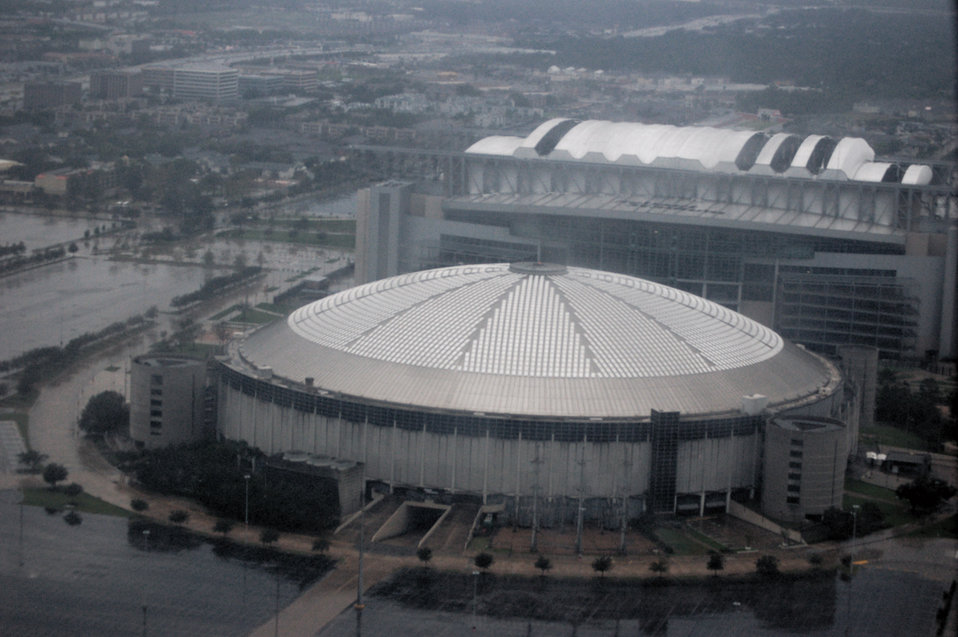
Airmen survey Ike damage

Staff Sgt. Rick Caldwell aboard an HH-60G Pave Hawk survey the damage caused by Hurricane Ike Sept. 13 around Galveston, Texas. Airmen from across the Air Force are deployed to the 331st Air Expeditionary Group at Randolph Air Force Base, Texas, to assist with rescue operations.